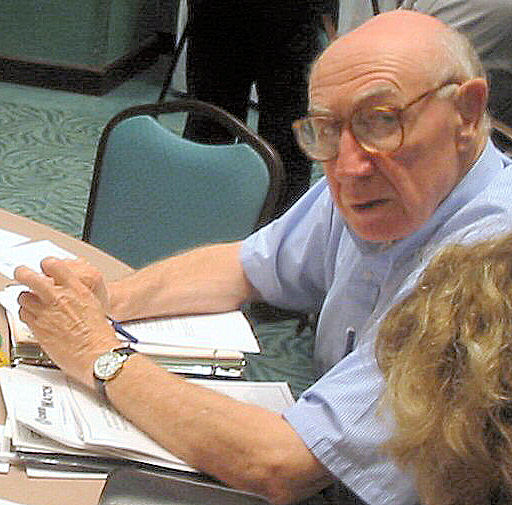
Author: Angelo Falcón